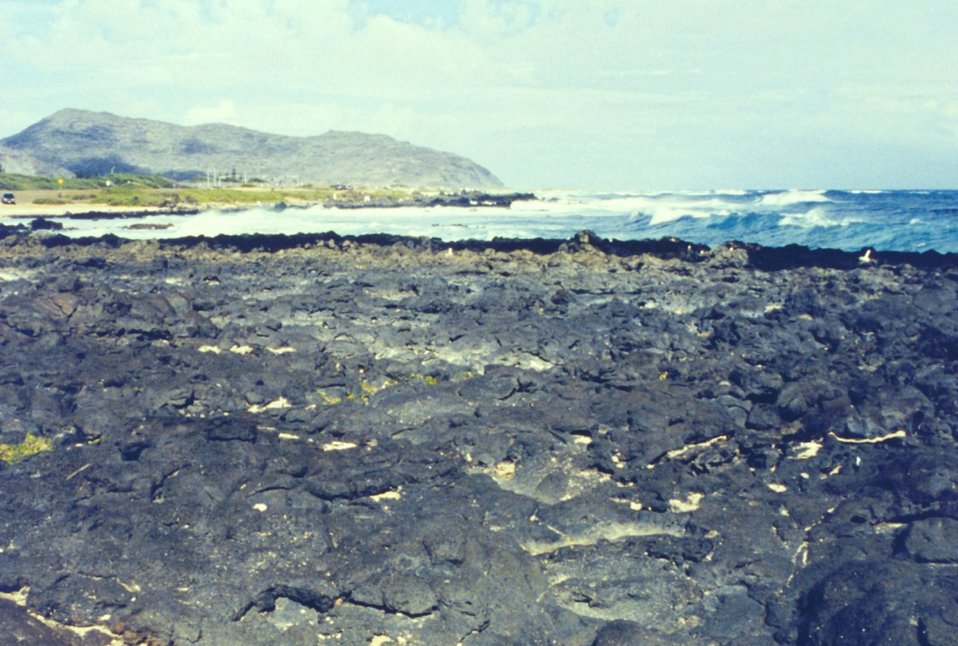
Black lava meets the sea.